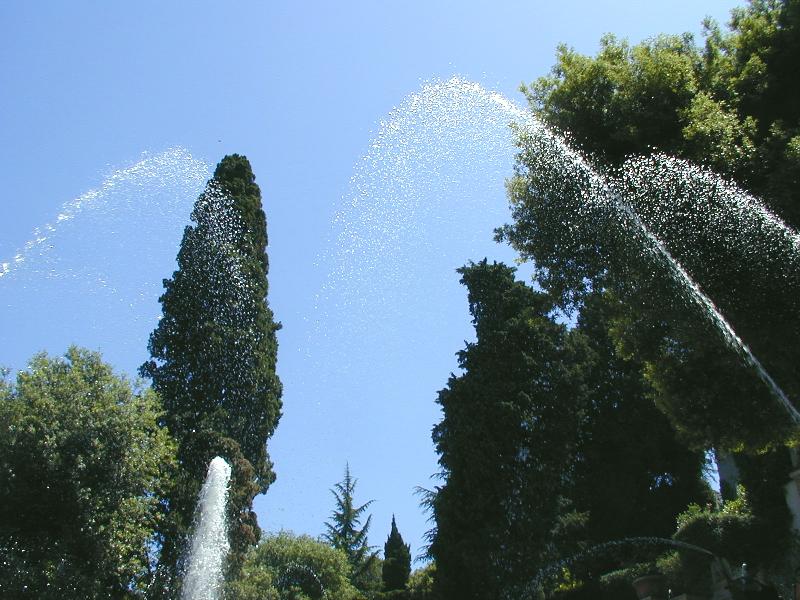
010609 22 villadesteacque